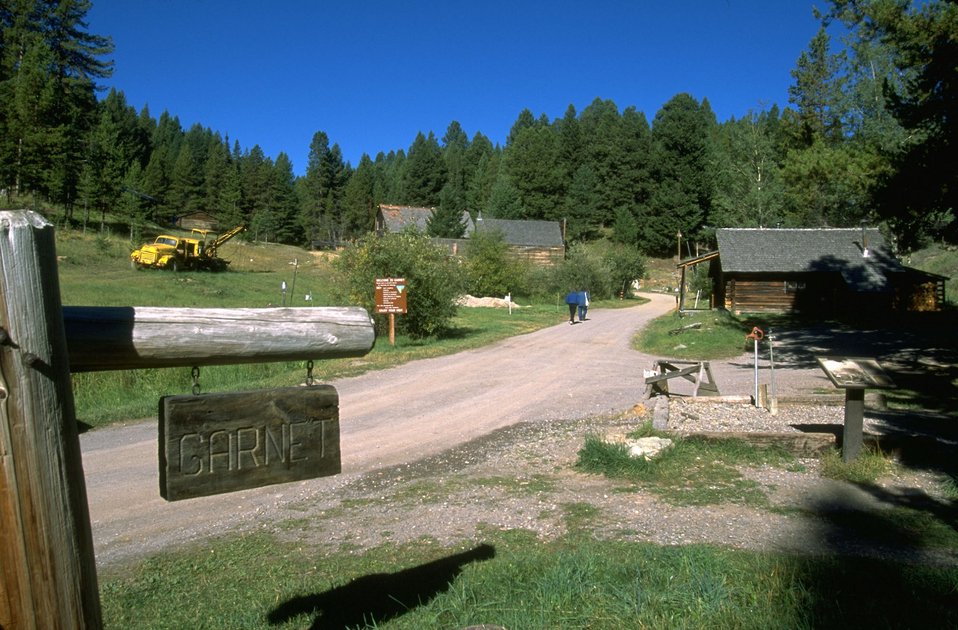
Garnet Ghost Town